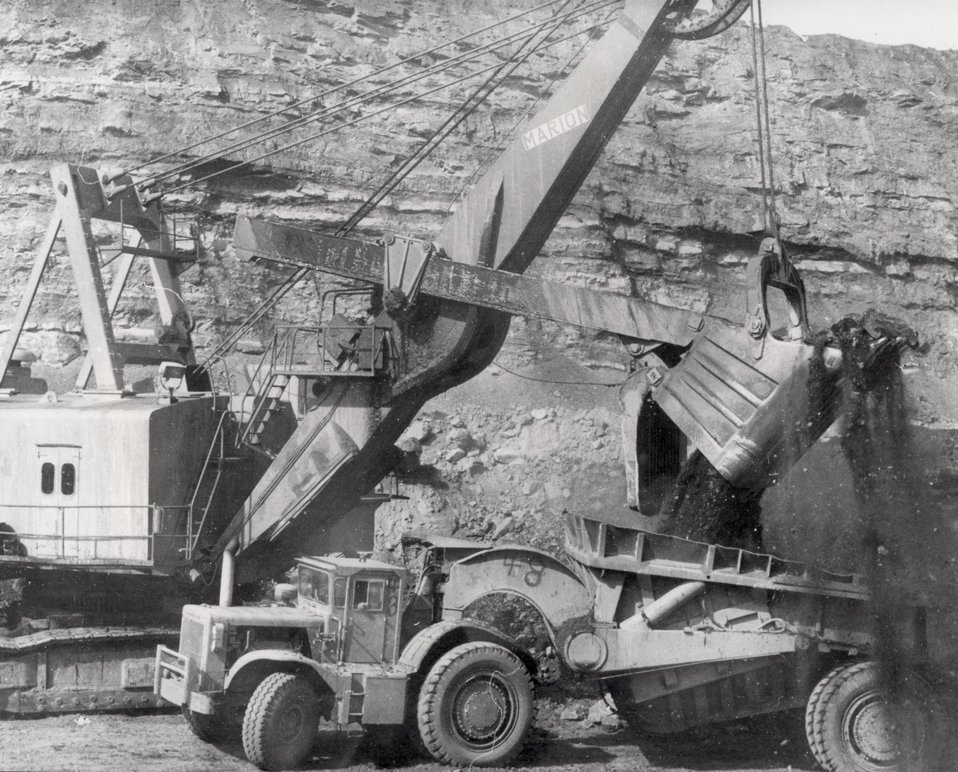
Office of Public Affairs Photo Office. c. 1976